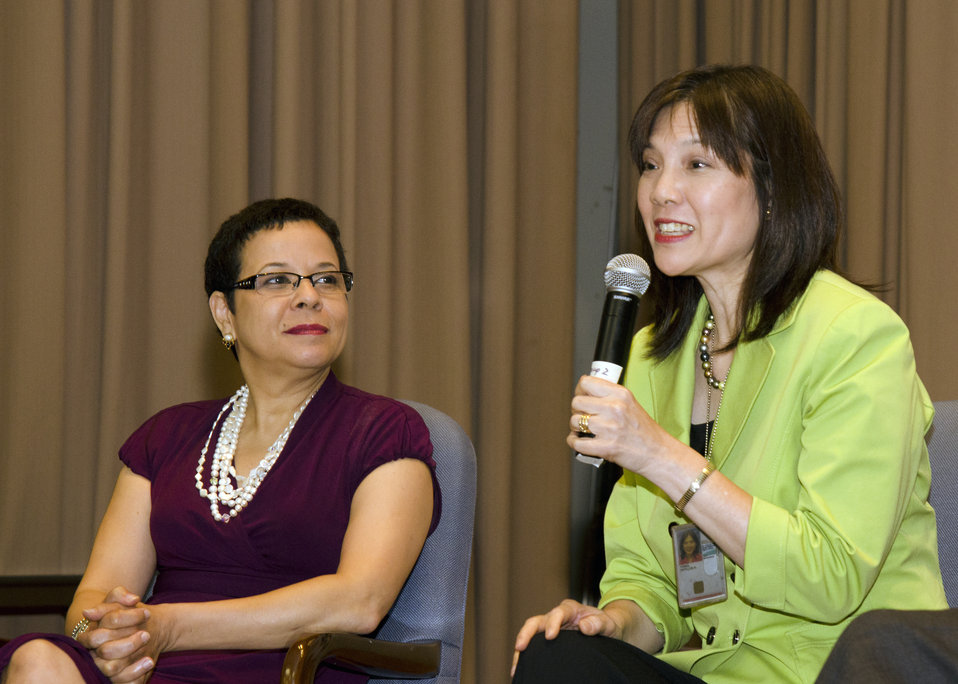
U.S. Department of Agriculture (USDA) General Counsel Ramona Romero listens to USDA Inspector General Phyllis Fong at the Womens Equality Day ceremonies held in the Jefferson Auditorium at USDAi n Washington, D.C. on Thursday, Aug. 22, 2013.